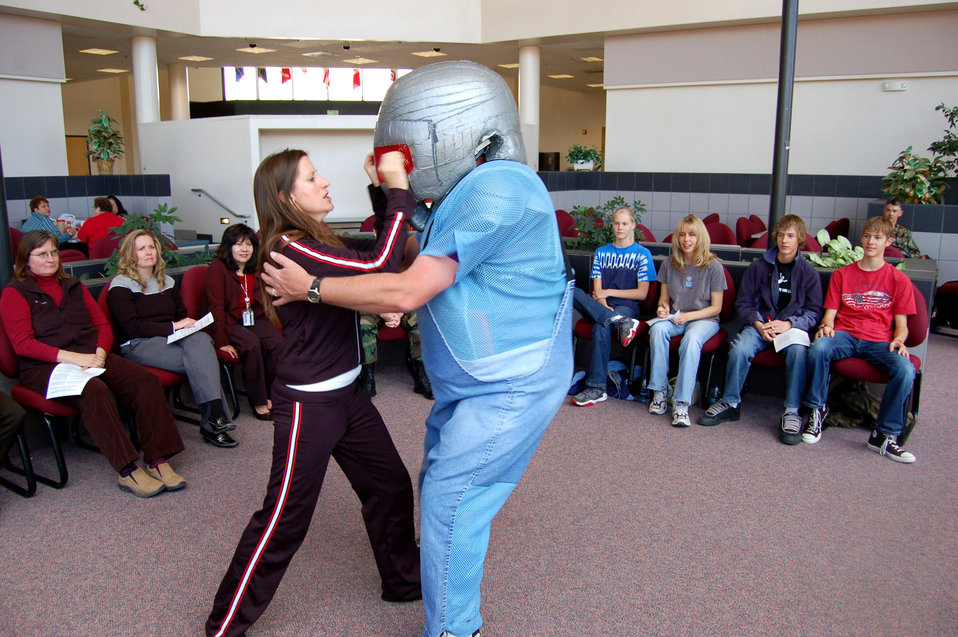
Airmen get smart with sexual assault training

Instructor Sam Rush-Walton demonstrates a physical suppression move to the padded head of instructor Karl Herndon April 11 during the Fullpower sexual assault workshop. The workshop was held in recognition of April being Sexual Assault Awareness Month. The attendees learned about protecting their personal boundaries, de-escalating a threatening confrontation, dealing with verbal attacks, stopping sexual harassment and using physical self-defense to escape from an assault